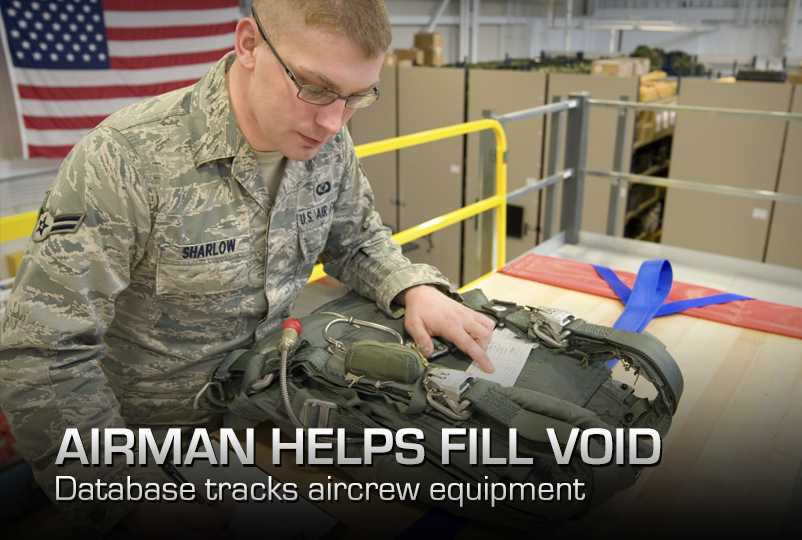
Airman helps fill void